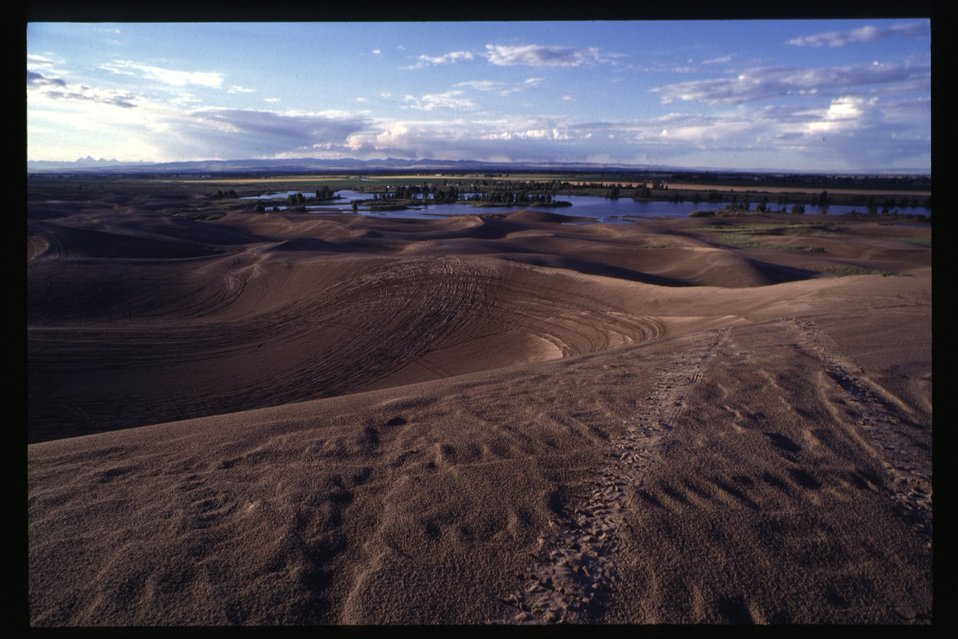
Recreation St Anthony Sand Dunes Overview Idaho Falls Field Office USRD Upper Snake River District